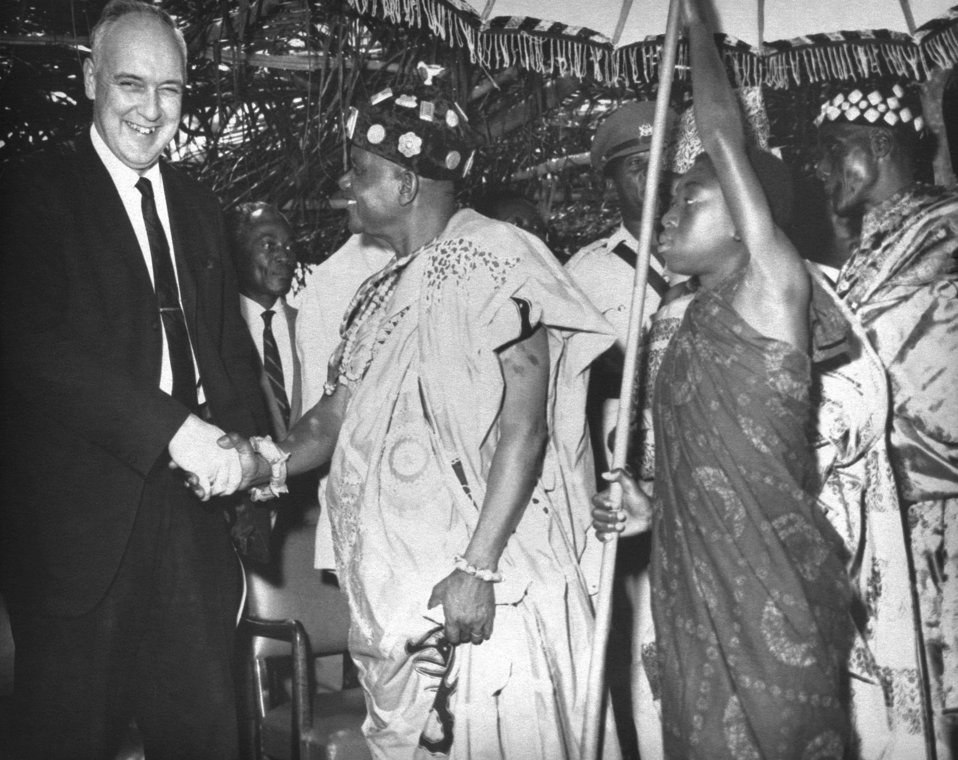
This 1968 image depicts Ghana's Regional Chieftain Mampong Akwapim, Timi of Ede, with Surgeon Gen. William Stewart.